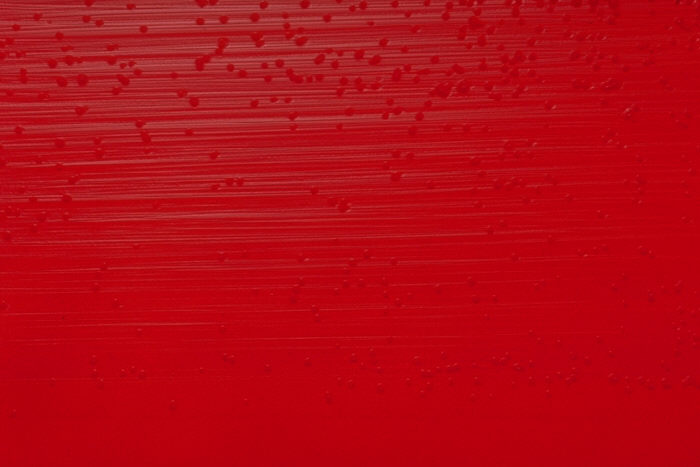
Blood agar plate culture of Eikenella corrodens.